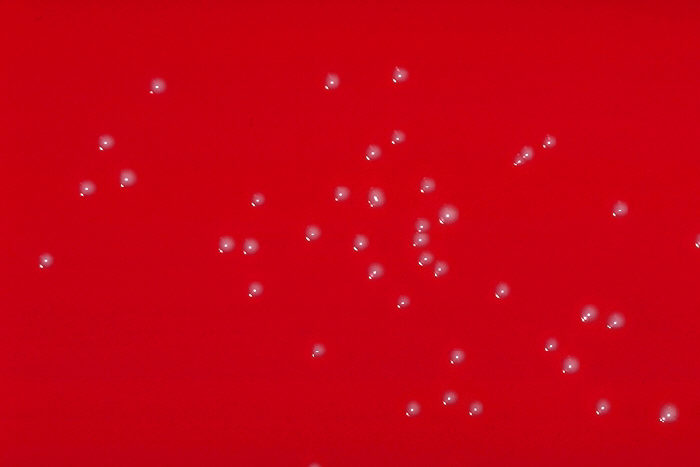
Blood agar plate culture of Corynebacterium pseudotuberculosis.